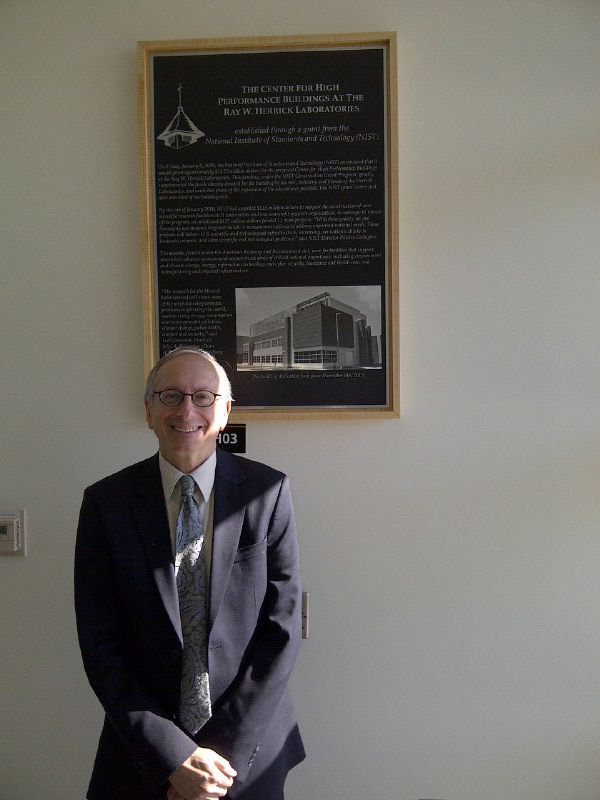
Dr. Howard Harary, Acting Director of the NIST Engineering Laboratory at the dedication of Purdue University’s Center for High Performance Buildings Ray W. Herrick Laboratories made possible with a NIST construction grant.